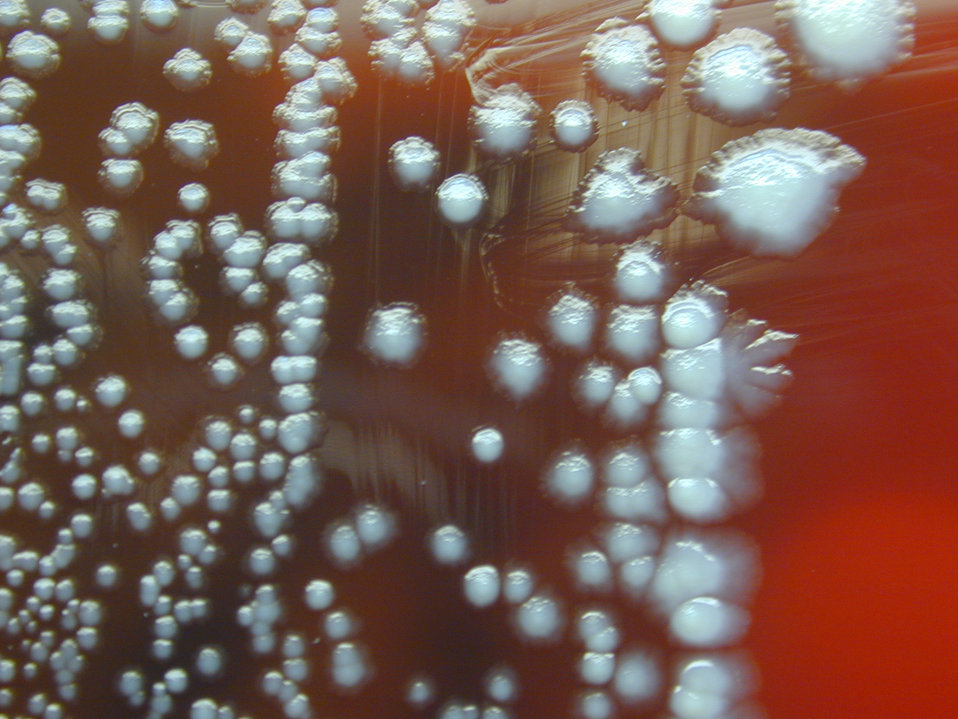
Yersinia pestis on Sheep Blood Agar, 72hrs.